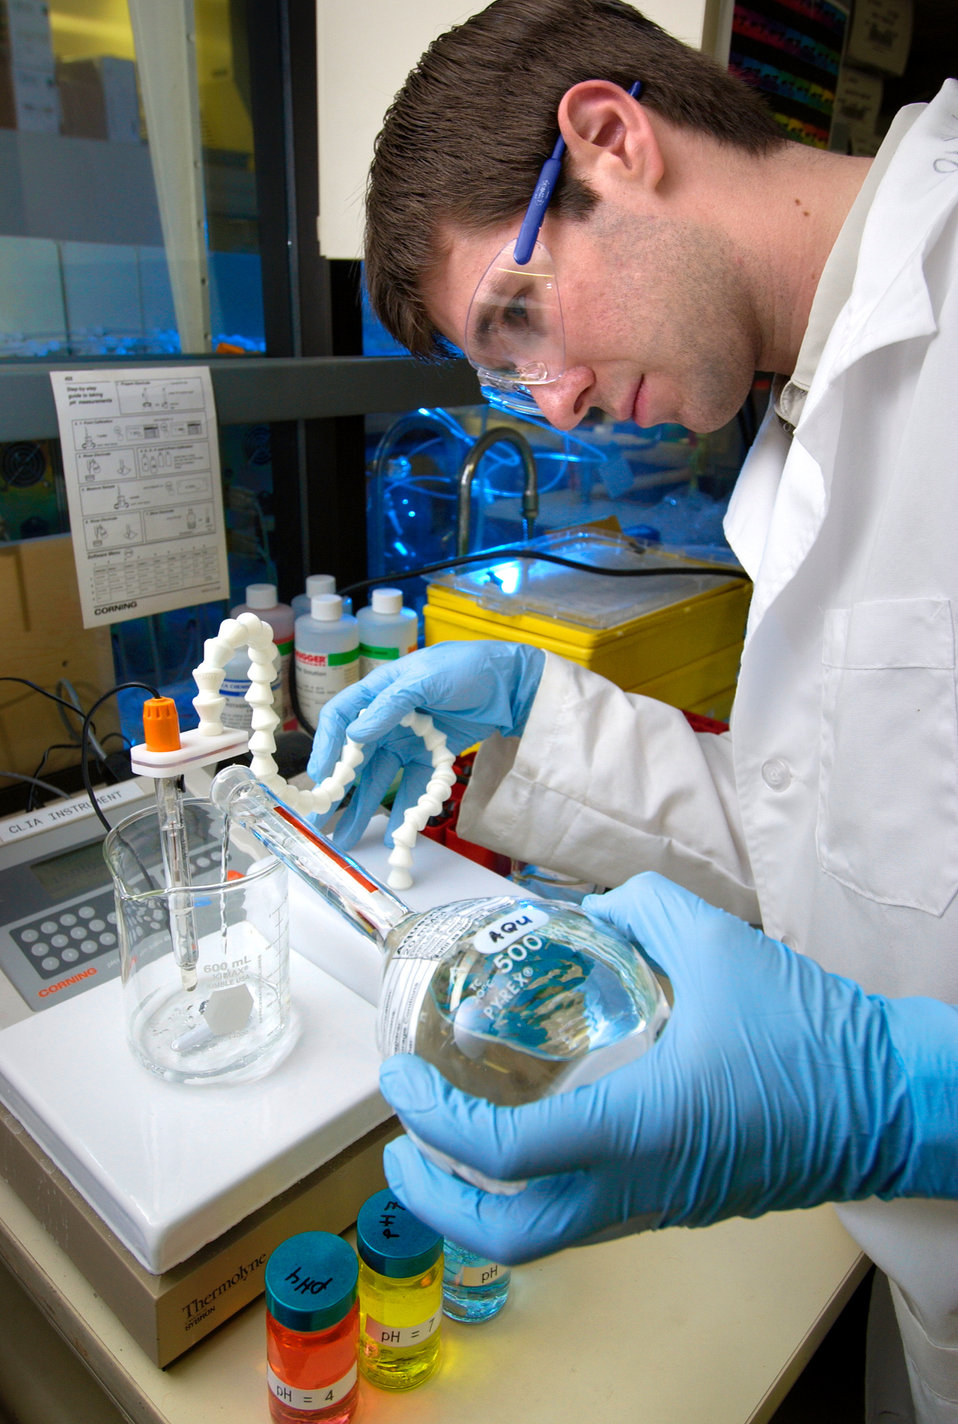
Jason Tully, a CDC laboratorian, was shown here using the pH meter in order to prepare a buffer solution in the Personal Care Products Laboratory (PCPL) located in a CDC lab on the organization's Chamblee, Georgia campus.